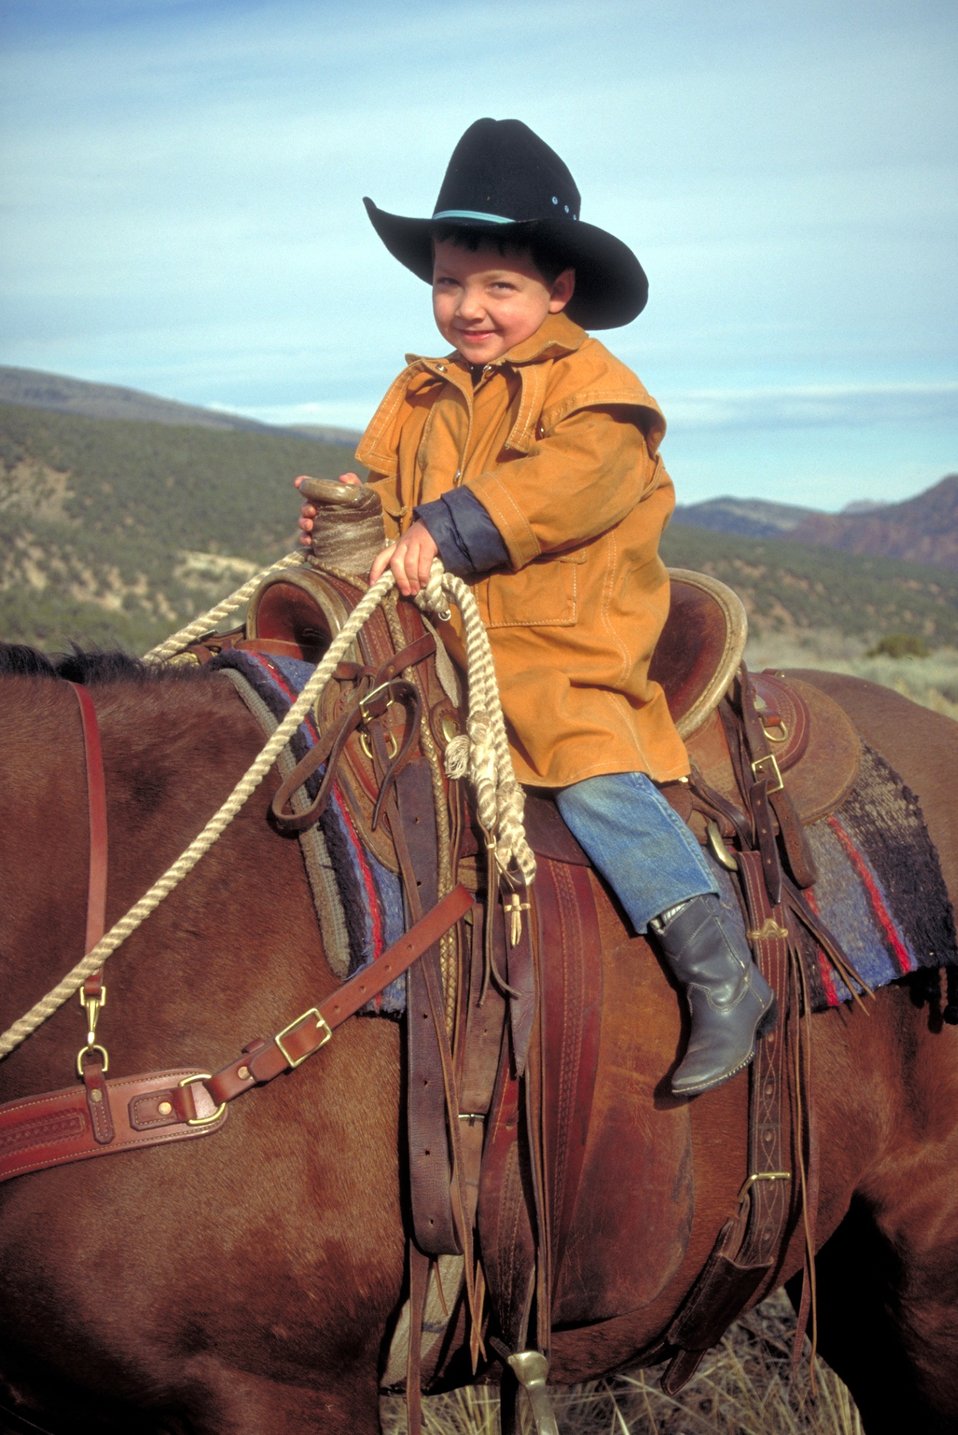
Working cowboys living near Vernal, Utah.